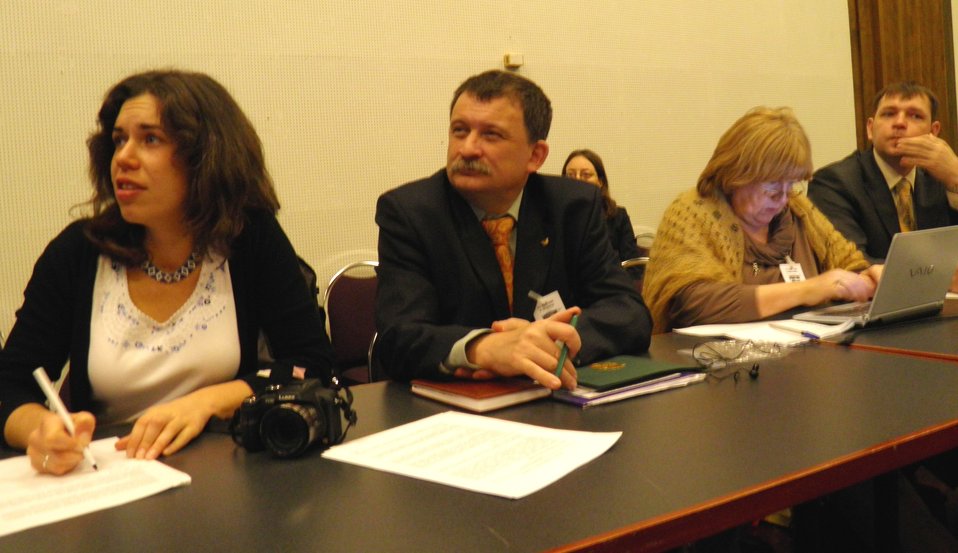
Nikolaeva Stepanitsky Danilina

Russian Ministry of Environment and Natural Resources officials visit the U.S.